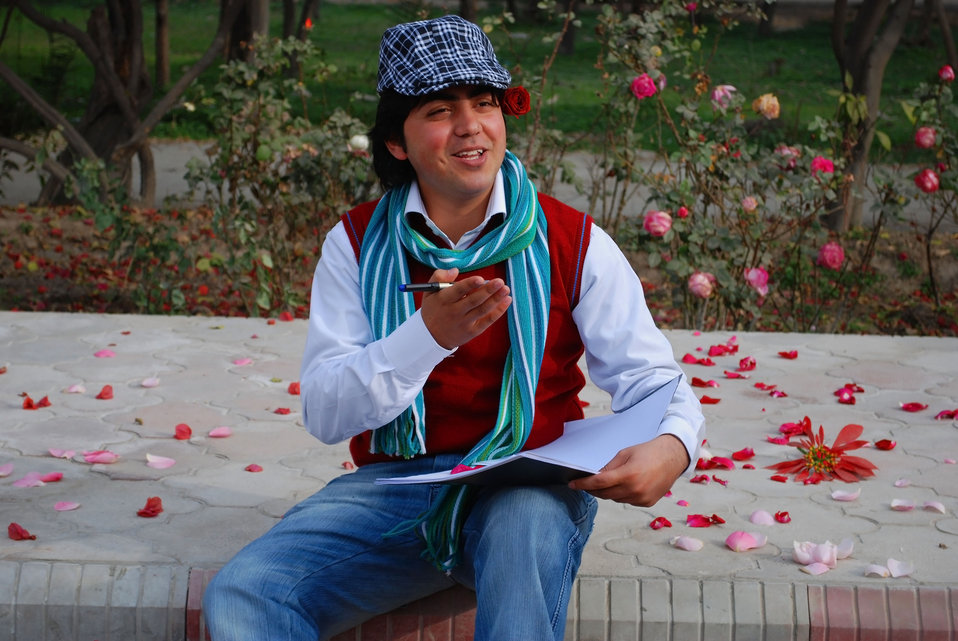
'On the Road' in Nangarhar Province